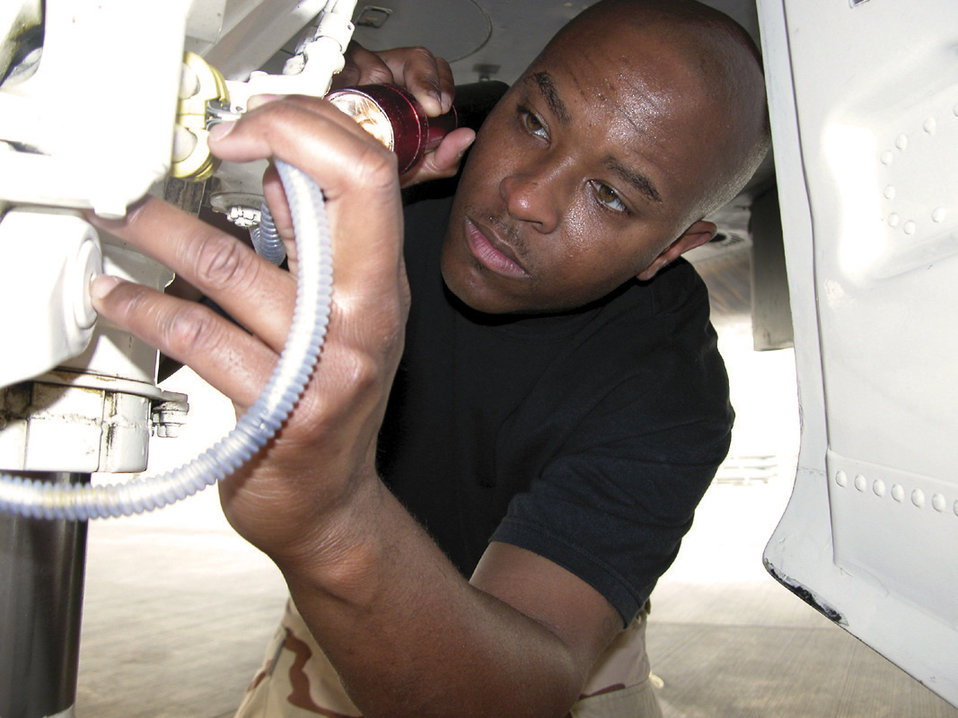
Just a phase

SOUTHWEST ASIA -- Staff Sgt. Shawn Nunnally checks an F-15E Strike Eagle's wires during a main landing gear inspection at a forward-deployed location May 3. Airmen of the 379th Expeditionary Aircraft Maintenance Squadron's Strike Eagle phase shop have performed 26 inspections over a 66-day period and have maintained a 94-percent quality assurance inspection pass rate. Sergeant Nunnally is the swing shift floor chief for the shop and is deployed from Royal Air Force Lakenheath, England.